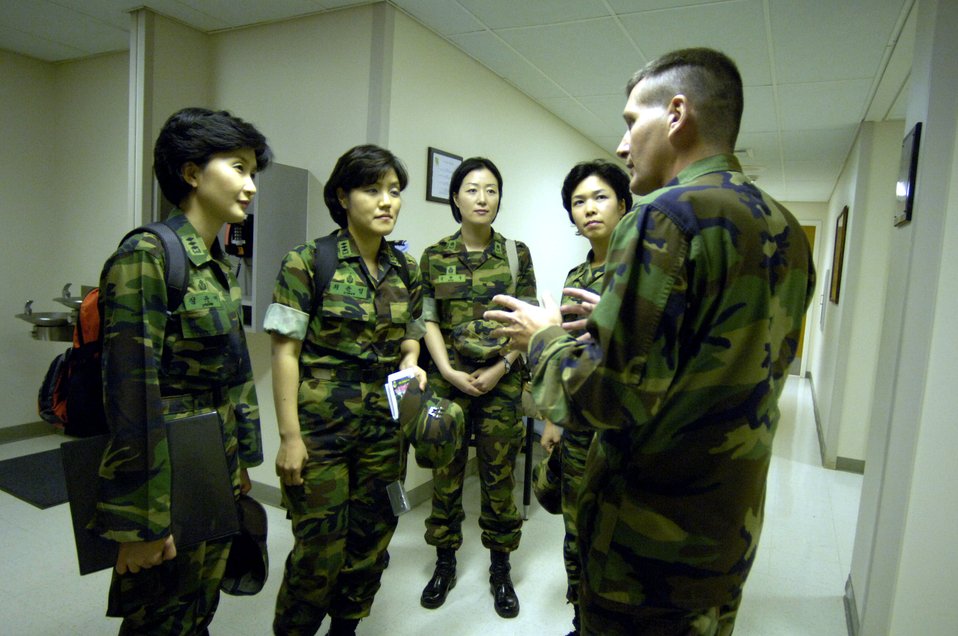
Korean nurses visit Hickam to exchange ideas

Lt. Col. David Beavers explains the operation of the William R. Schick Clinic to four visiting South Korean Air Force nurses at Hickam Air Force Base, Hawaii, on Tuesday, April 25, 2006. South Korea sent seven nurses to the island to discuss mass casualty response, civil-military coordination and biohazard response procedures for natural disaster management. The colonel is the chief nurse at the clinic and is assigned to the 15th Medical Group.